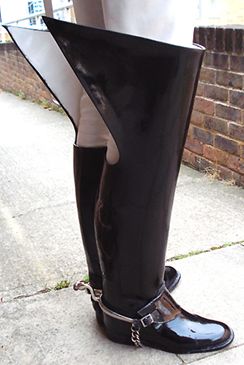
Jackboots of the Household Cavalry, British Army.